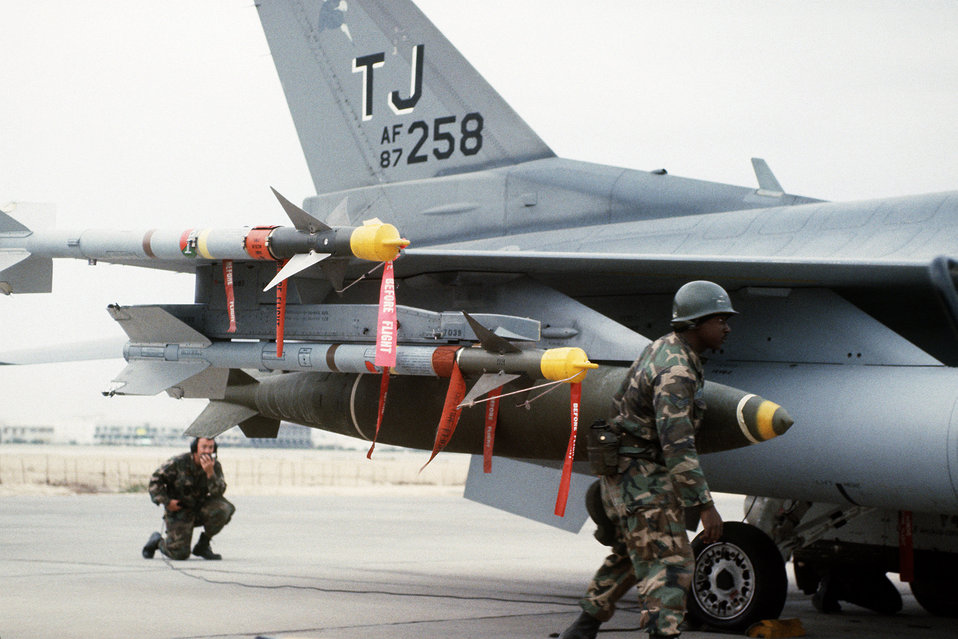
Loading ordnance on a F-16C Fighting Falcon

1990's -- Members of the 401st Aircraft Generation Squadron load ordnance on a 401st Tactical Fighter Wing F-16C Fighting Falcon aircraft in preparation for the first daylight strike against Iraqi targets during Operation Desert Storm. The F-16C is armed with AIM-9 Sidewinder missiles and a Mark 84 2,000-pound bomb.